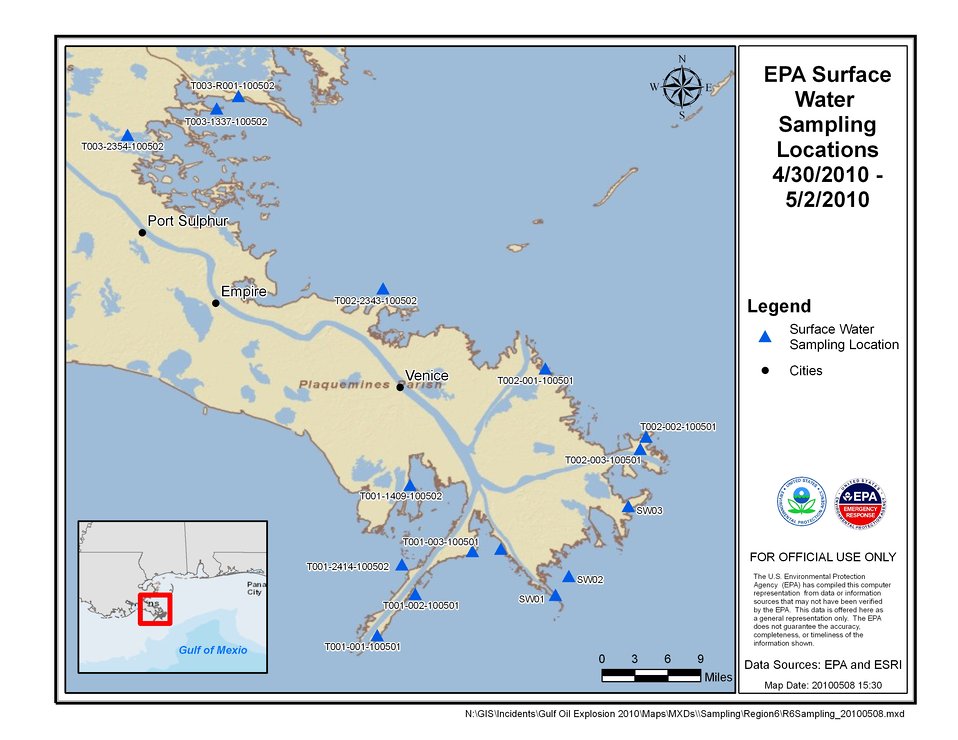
EPA Water Sampling Locations April 30 - May 2, 2010